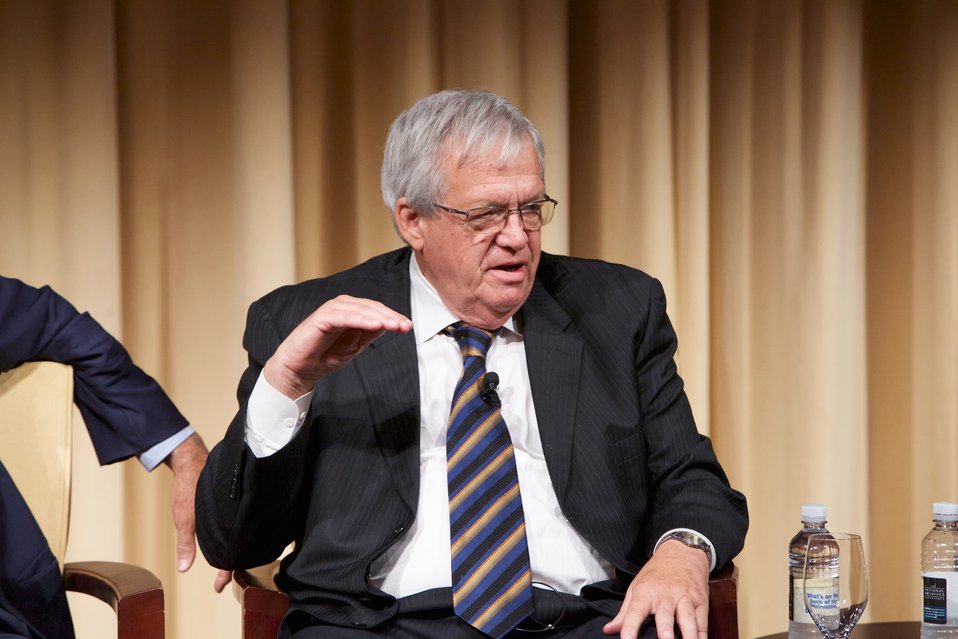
The Role of Congress in International Crises